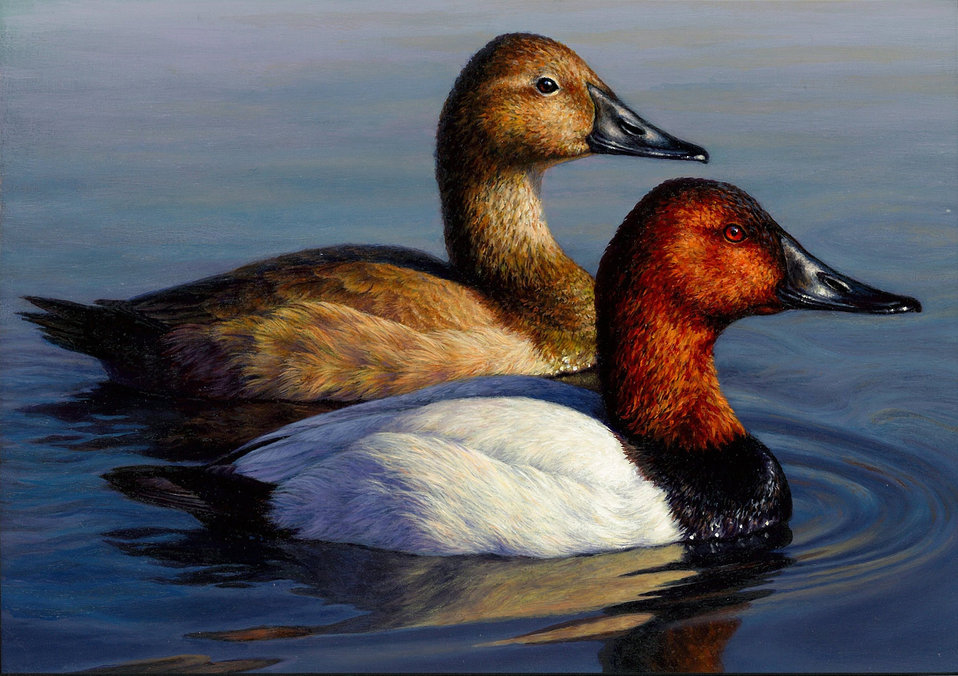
2013 Duck Stamp Contest Submission 199

Art submission for the 2013 Federal Duck Stamp Contest.